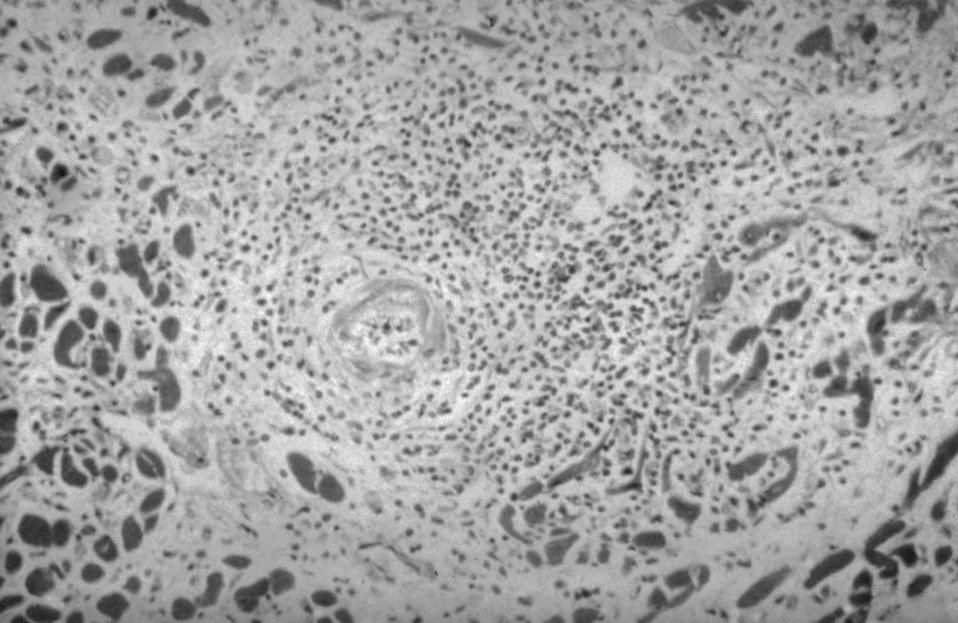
A photomicrograph of a syphilitic gumma of the heart.